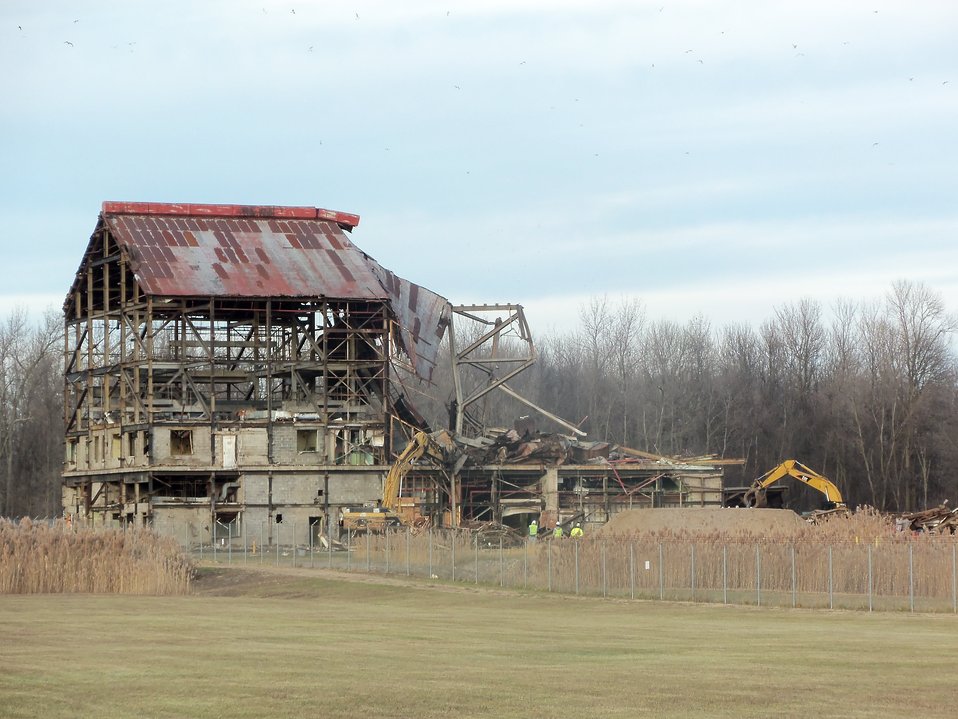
BLDG 401 SHELL

Activities from the Niagara Falls Storage Site, which is associated with the former Lake Ontario Ordnance Works. Formerly Utilized Sites Remedial Action Program (FUSRAP), a program initiated in 1974 to identify, investigate and clean up or control sites that were part of the Nation's early atomic energy and weapons program. Activities at the sites that are eligible for FUSRAP were conducted by Manhattan Engineer District (MED) or the Atomic Energy Commission (AEC), both predecessors of the Department of Energy (DOE). The U.S. Army Corps of Engineers was assigned management of FUSRAP by Congress in 1997.